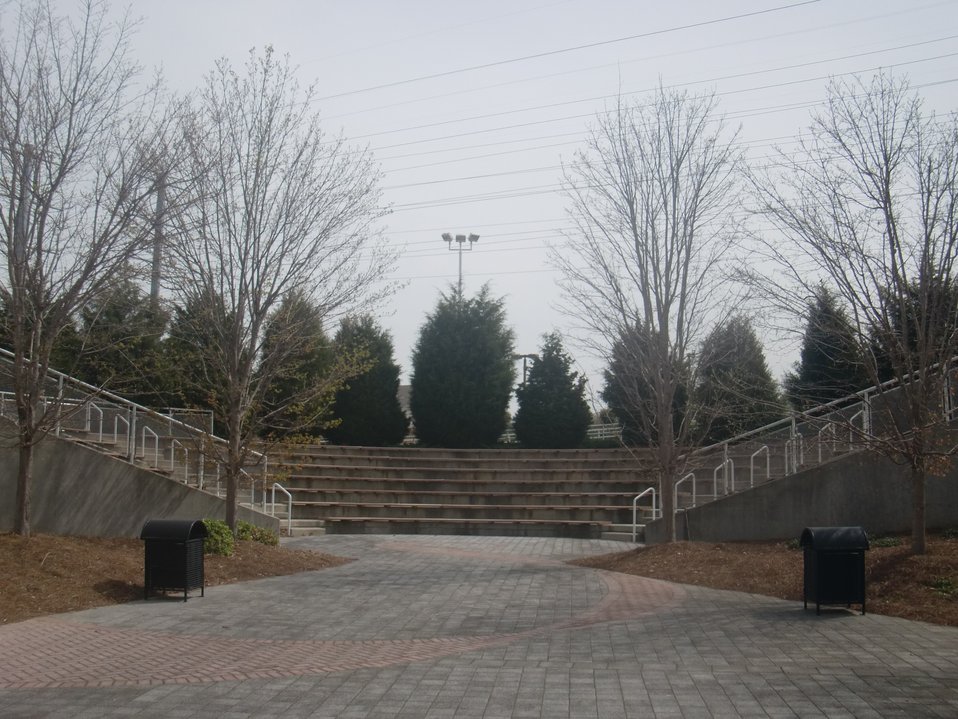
Amphitheater; Location: National Archives at Atlanta, Morrow, GA